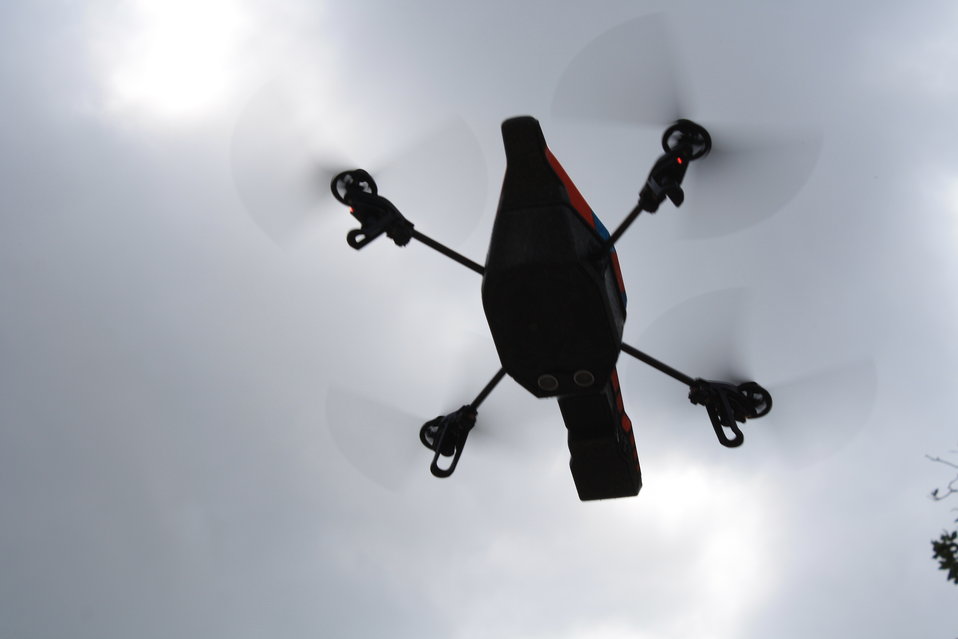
Testing the 'drone'

A 'drone' was used to capture a daytime 'bats eye view' of the cave